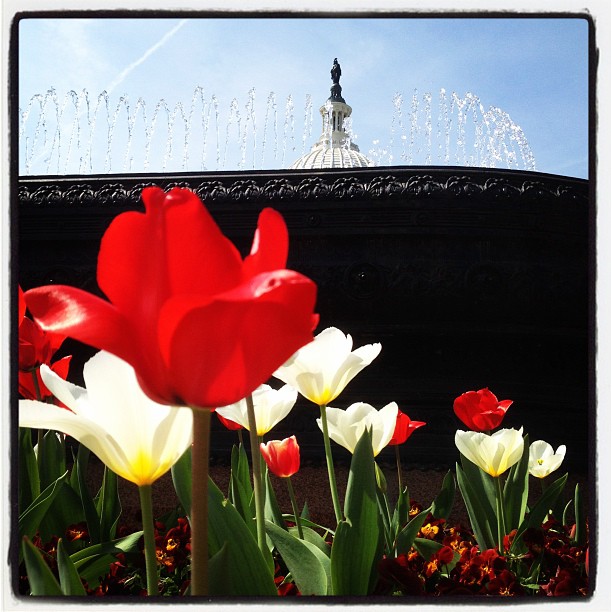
East Front Olmsted fountains.